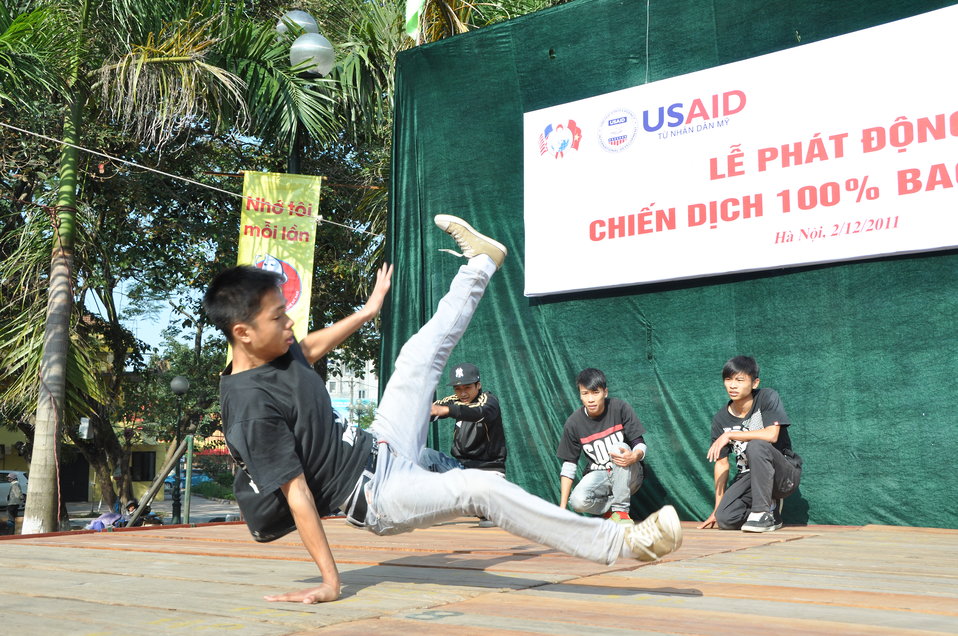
100% Condom Use Campaign Launch, Dec. 2, 2011